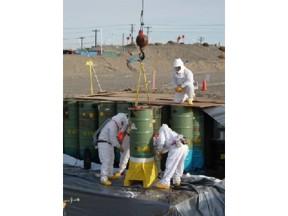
Hanford Site waste drum removal

Retrieval of waste drums that had been placed in trenches in the 1970s and 1980s at the Hanford Site near Richland, WA. The drums contain low-level, mixed low-level, and transuranic (TRU) waste..